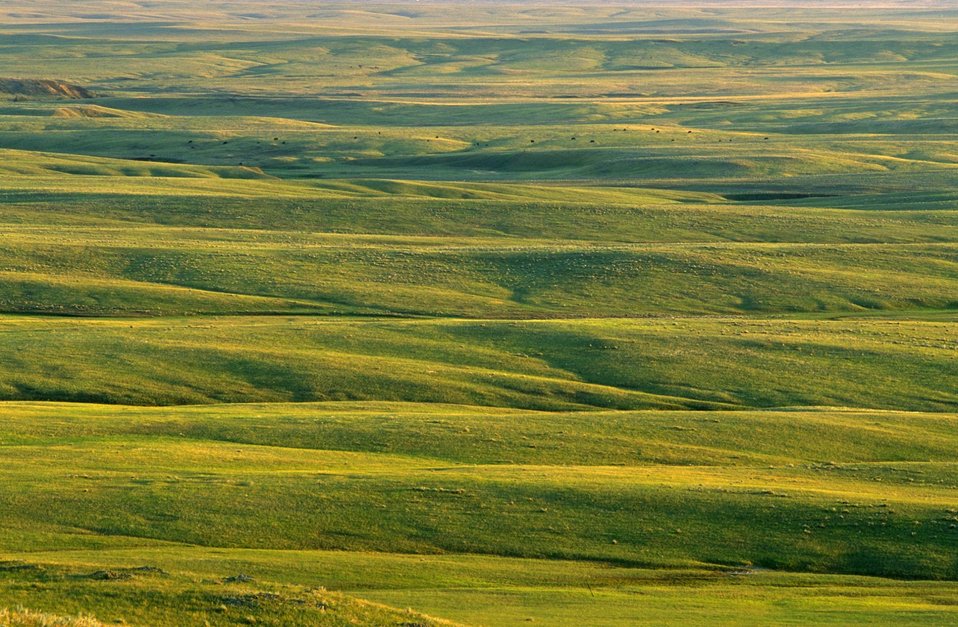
Grassland Vista 35 miles north of Belle Fourche